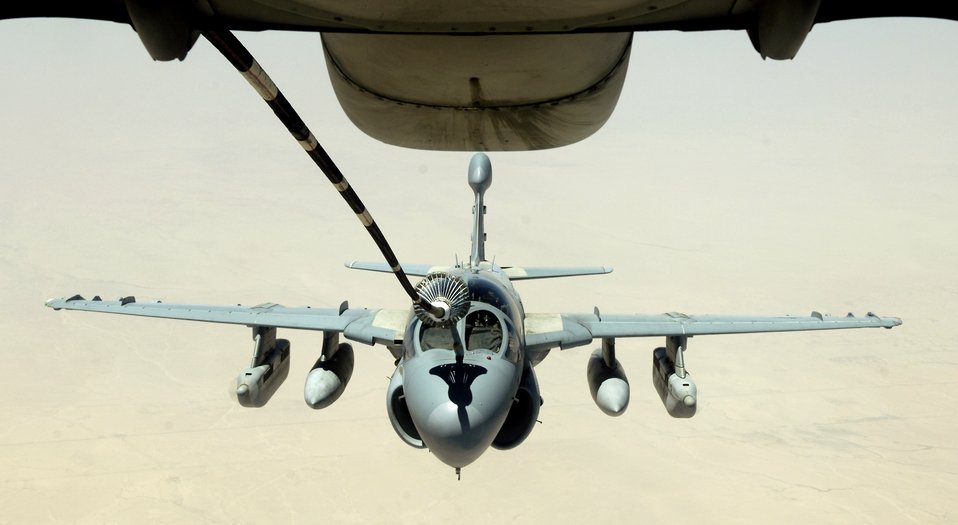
Two refuelers, one squadron can handle any situation

An EA-6 Prowler refuels from the drogue of a KC-10 Extender on July 18. The KC-10 is with the 908th Expeditionary Air Refueling Squadron in Southwest Asia.